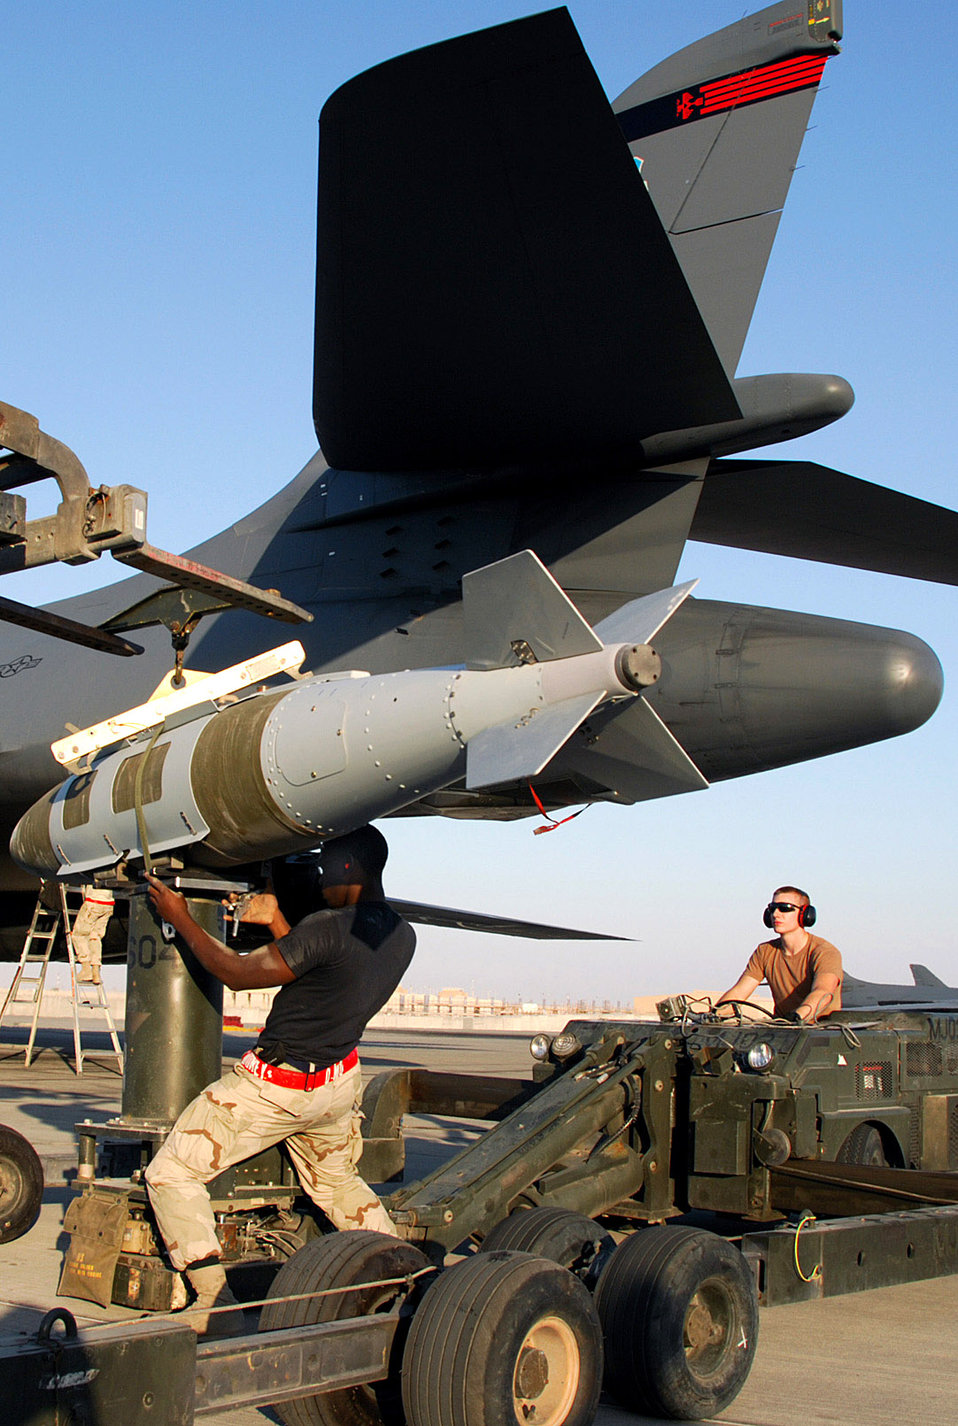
Having a bomb

Airman 1st Class Daniel Morton secures a bomb to the ram jammer operated by Airman David Pownell Dec. 21 at a Southwest Asia air base. The two Airmen are assigned to the 379th Expeditionary Maintenance Squadron and deployed from Dyess Air Force Base, Texas. Airman Morton's home town is Anderson, S.C., and Airman Pownell is from Appleton, Wis.